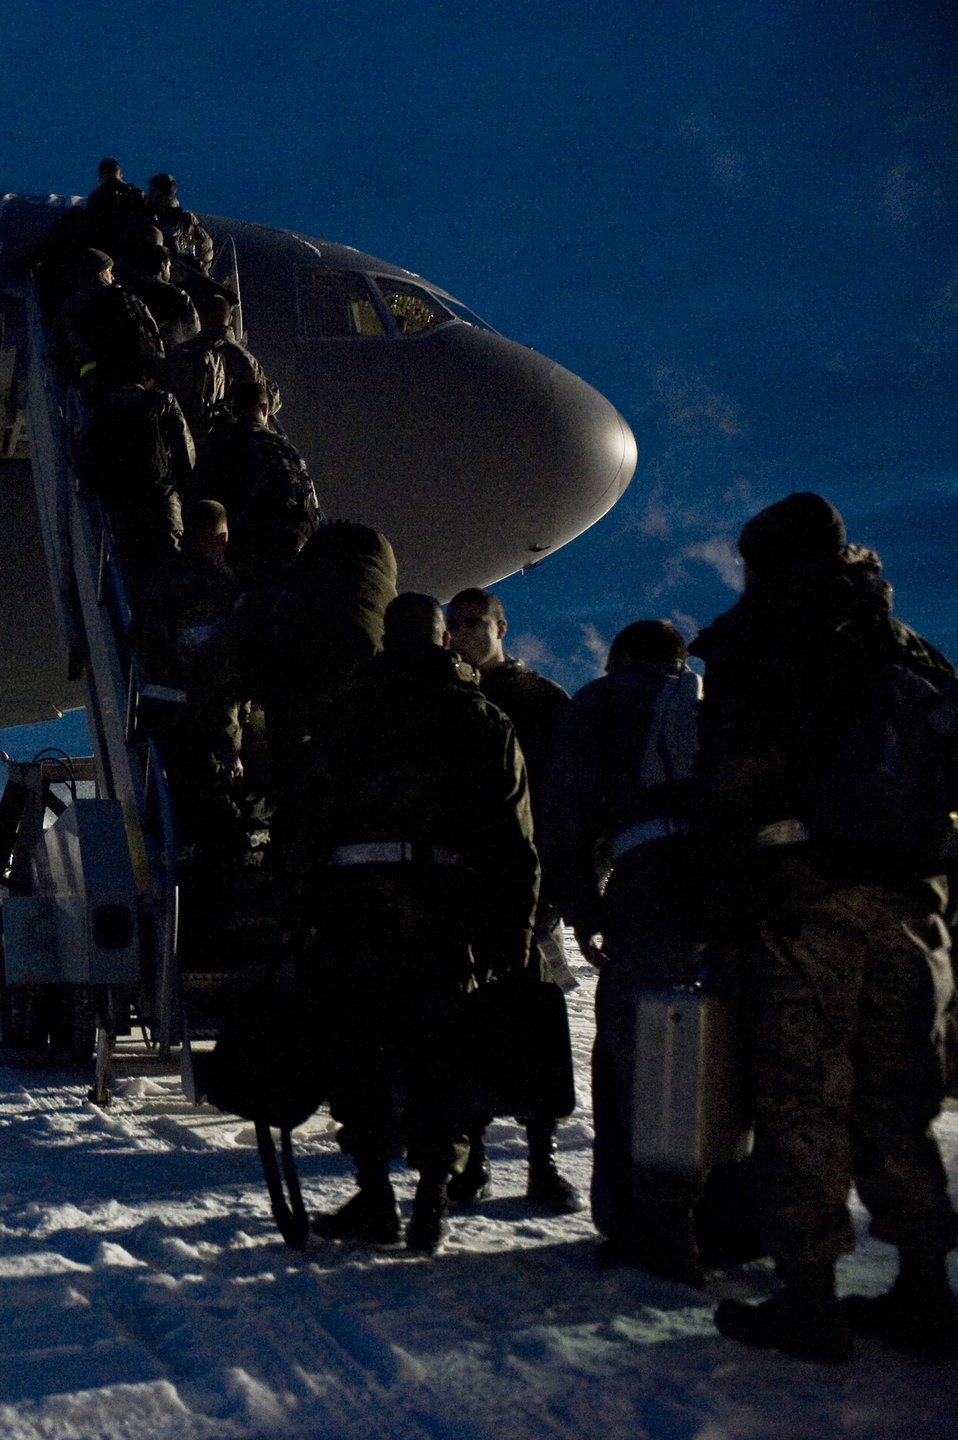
Eielson Airmen start winter road show in Hawaii

Airmen of the 354th Aircraft Maintenance Squadron board a KC-10 Extender Dec. 4 as they depart Eielson Air Force Base, Alaska. They left for Hickam AFB, Hawaii, where the members of the 18th Aggressor Squadron will provide expert threat academics Pacific Air Forces pilots.